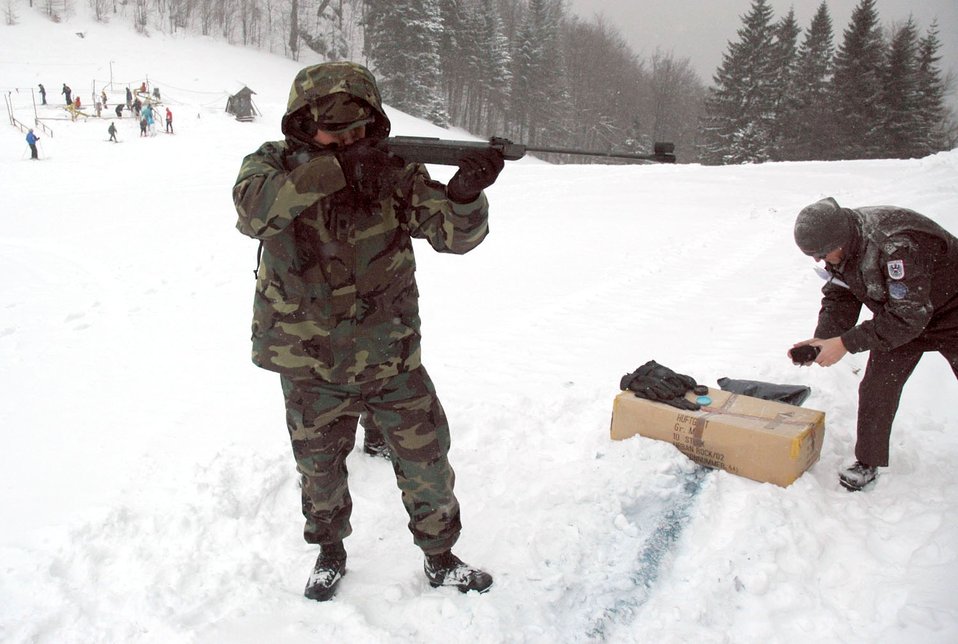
Let the games begin

TUZLA AIR BASE, Bosnia and Herzegovina (AFPN) -- Lt. Col. David Lowe takes some practice shots before competing in Operation Winter Games. Colonel Lowe is commander of Detachment 1, 401st Air Expeditionary Wing.